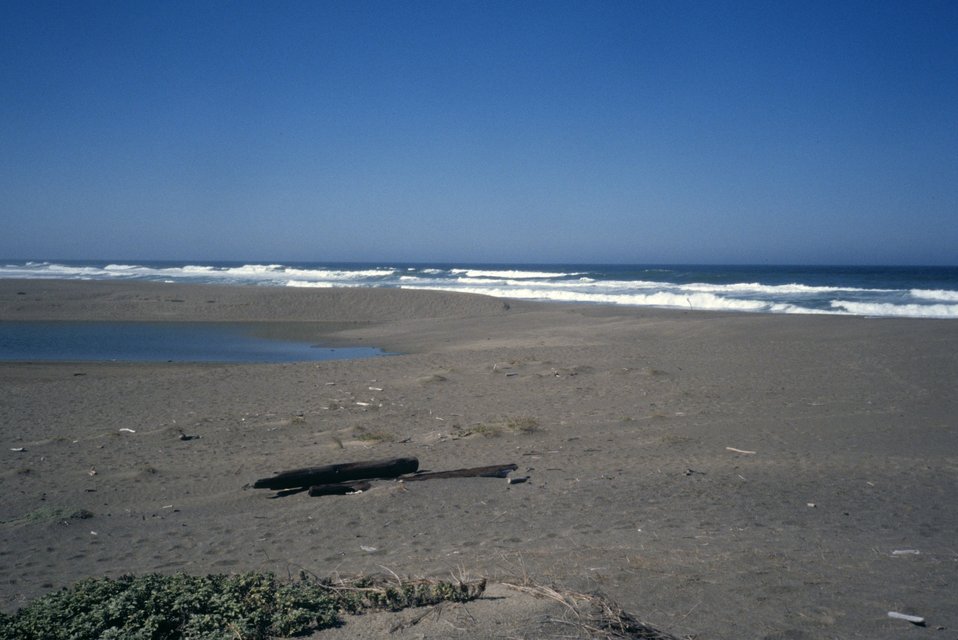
Point Reyes Great Beach. A clear day. Abbotts Lagoon closed off from the ocean on an early fall day.